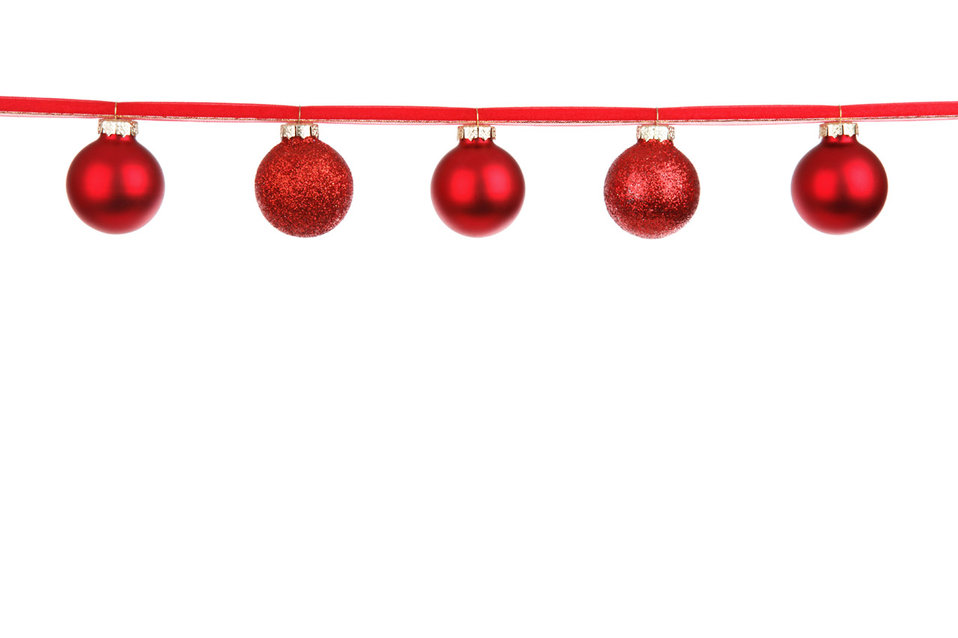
Red baubles on a ribbon isolated on white background.